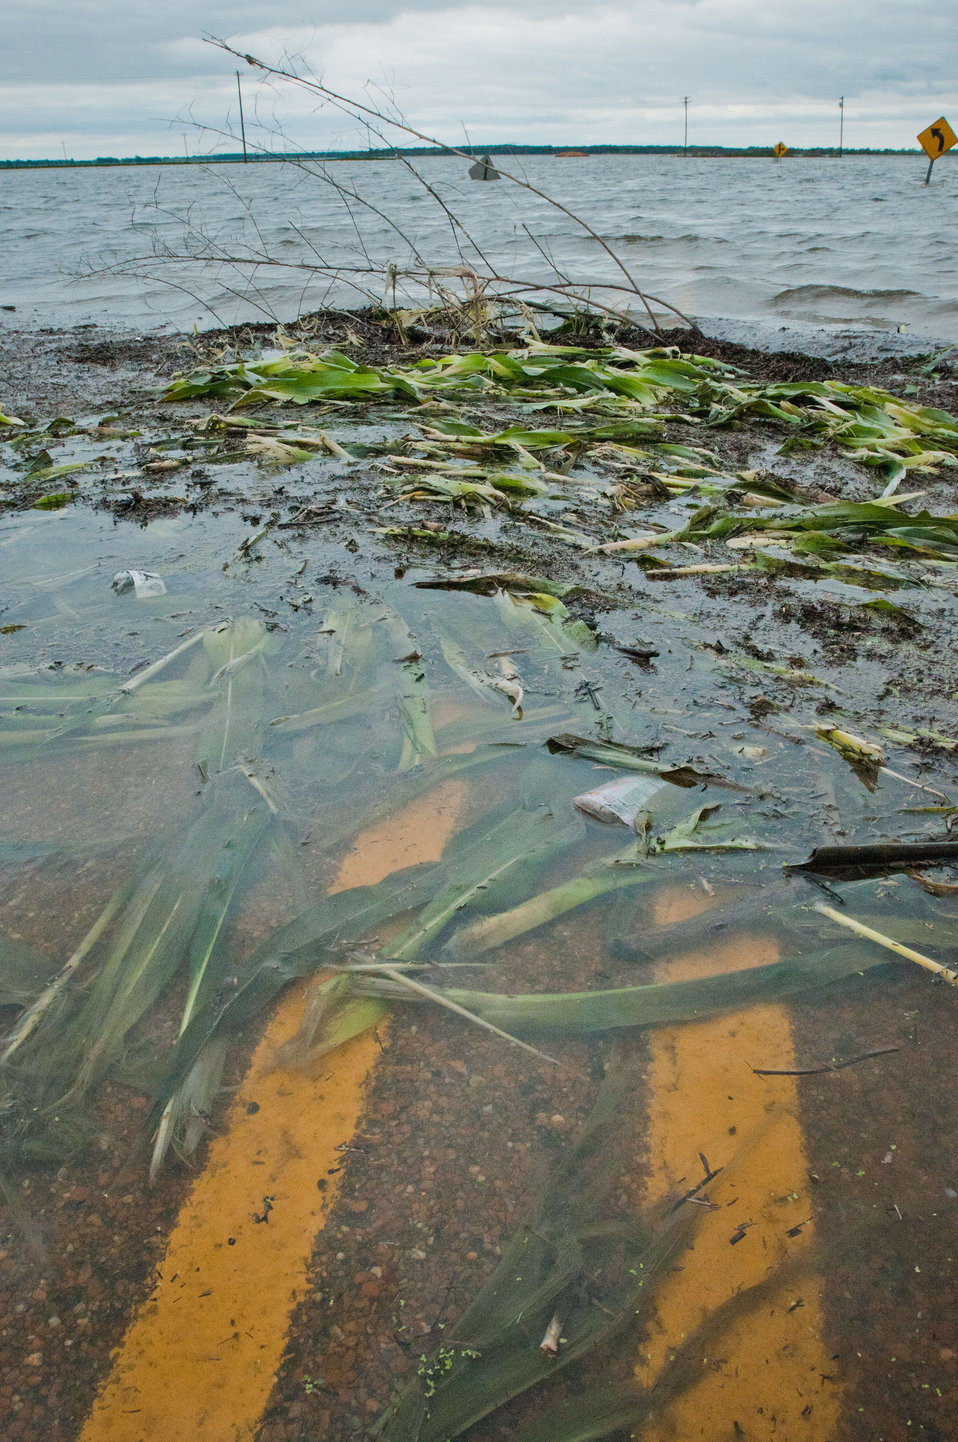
Mississippi River floodwaters have pushed into Yazoo River and into this corn field in Satartia, MS, on Monday, May 16. 2011. The community of 96 was evacuated and this clearing of approximately 4,000 acres were completely flooded. Wave action and decay has freed parts of corn stalks collecting along the new shoreline. The water saturated soil does not allow enough oxygen to the plant, by the time the water is expected to recede, the stalks will be dead. The wheat was harvested earlier two weeks earlier than scheduled from wet fields and will have to be dried before being used or sold. New media crews come and go throughout the day reporting from this bridge and roadway.